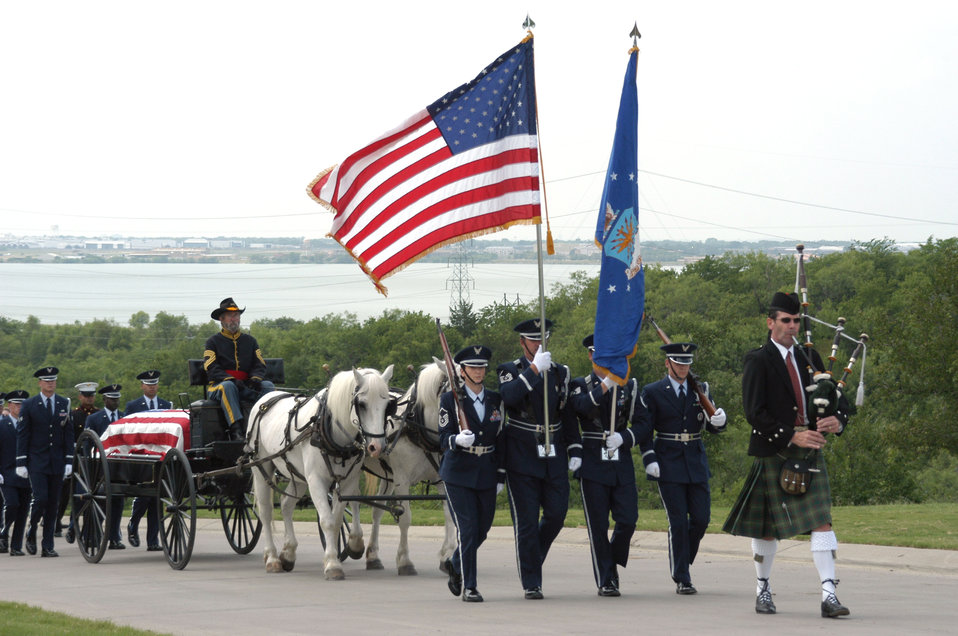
Going home

DALLAS -- A caisson carries the remains of Capt. Troy Cope as an Air Force color guard leads him to his final resting place during a repatriation ceremony at the Dallas-Fort Worth National Cemetery here May 31. Captain Cope's remains were recovered in China after his F-86 Sabre was shot down in 1952 during the Korean War.